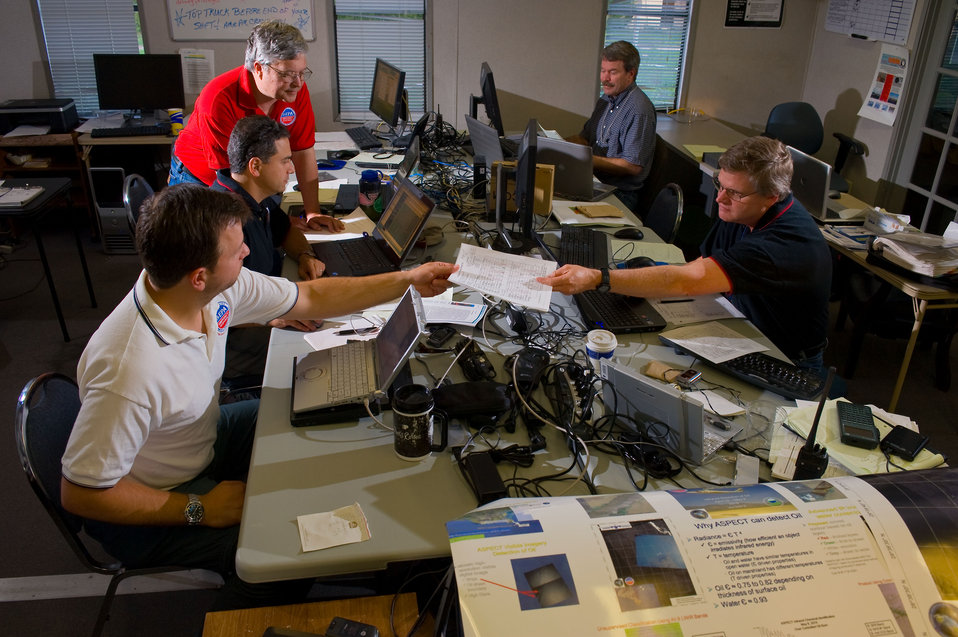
ASPECT data team

May 9, 2010 - U.S. EPA’s ASPECT aircraft team members process the day's data from overflights of BP Oil Spill in the Gulf of Mexico. Left to right, Paul Kudarauskas, John Cardarelli, Bob Kroutil, Tim Curry, and Team Leader Mark Thomas.